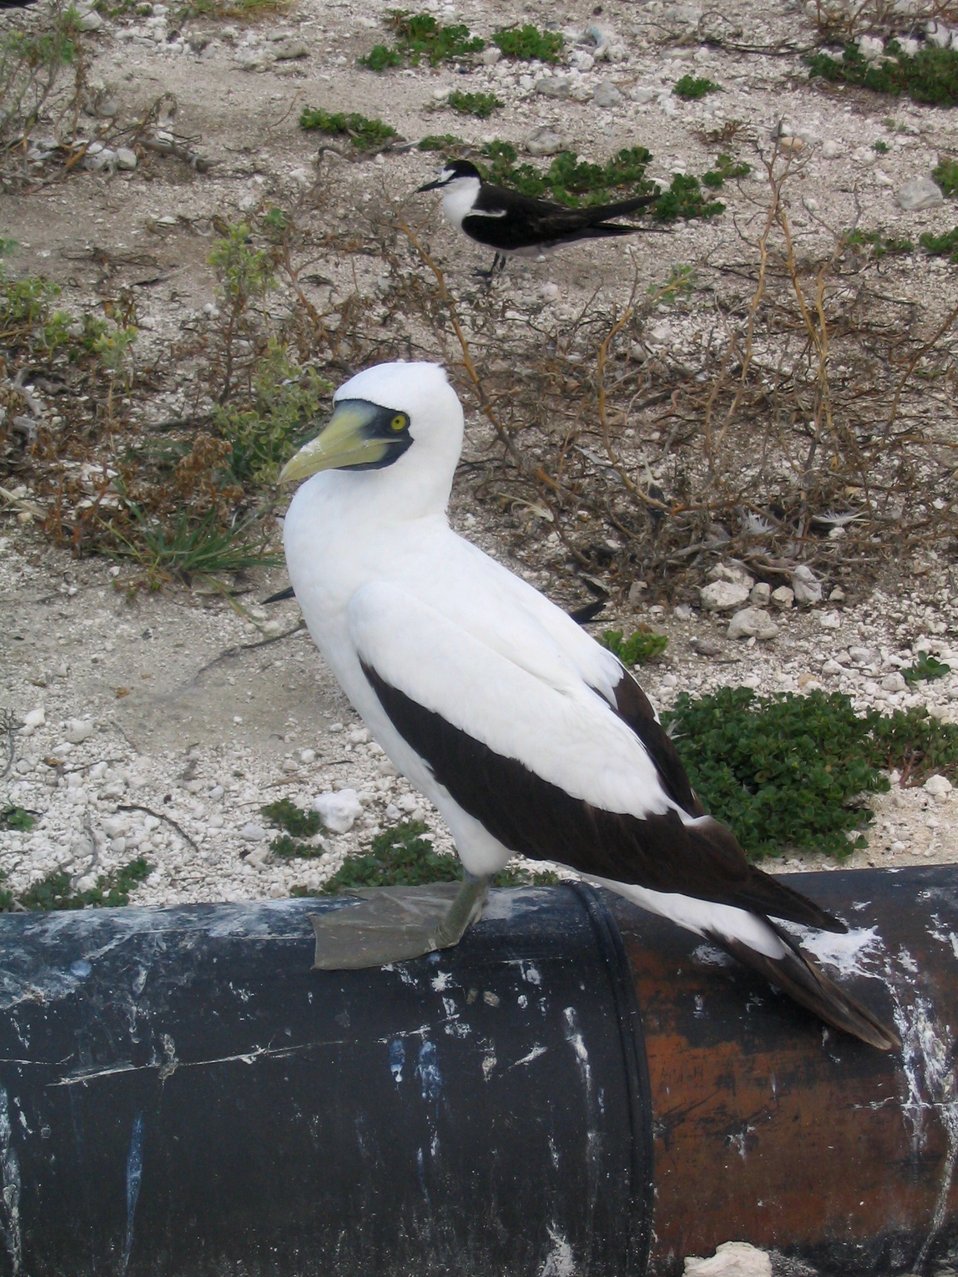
Masked booby.